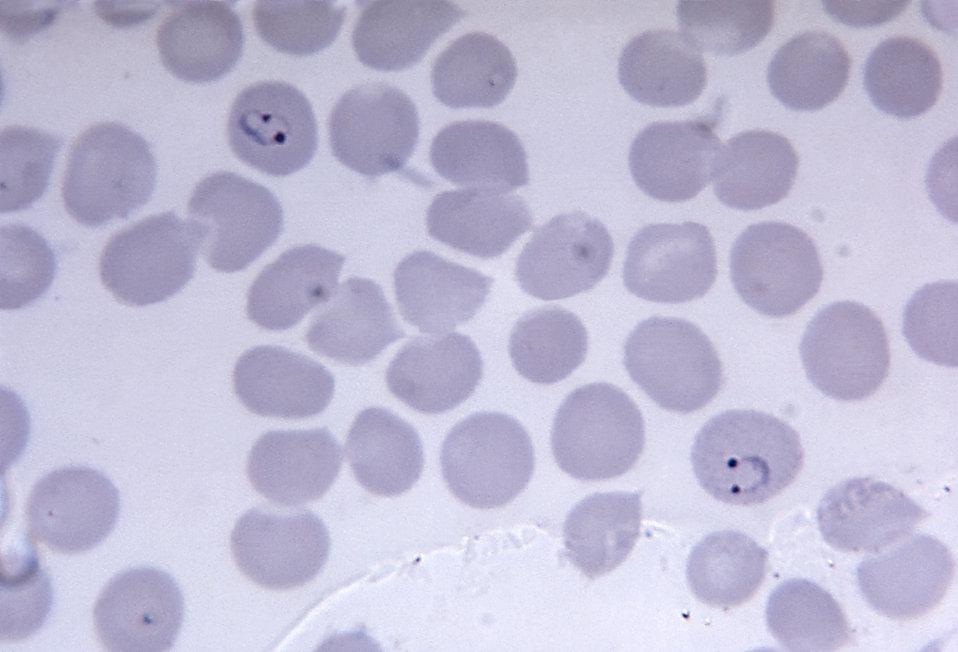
This thin film micrograph depicts 2 ring form Plasmodium vivax parasites, each with 2 chromatin dots; Mag. 1125X.